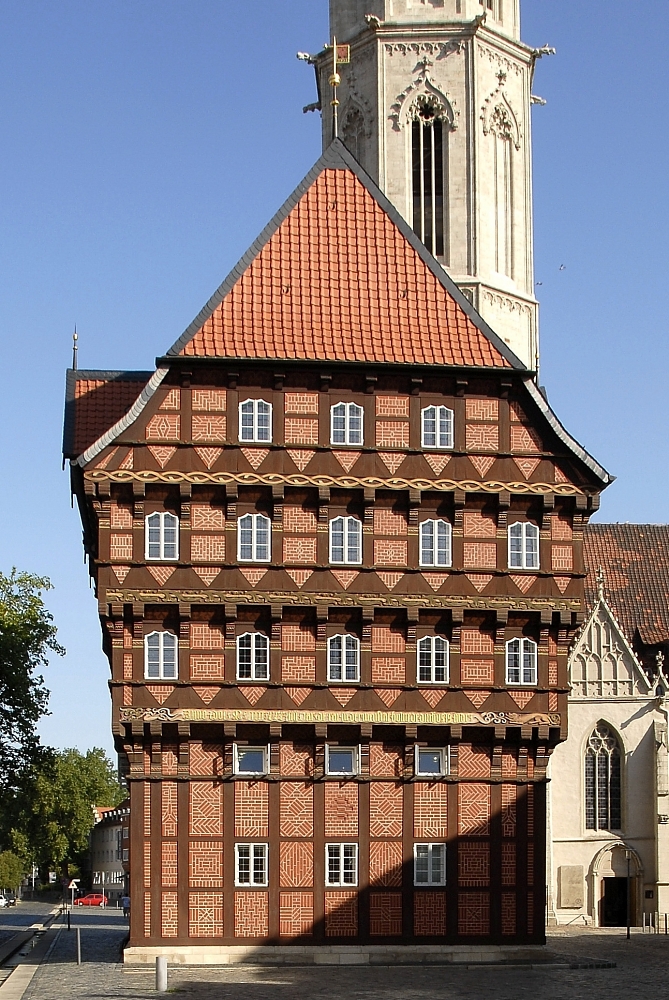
Alte Waage, Braunschweig